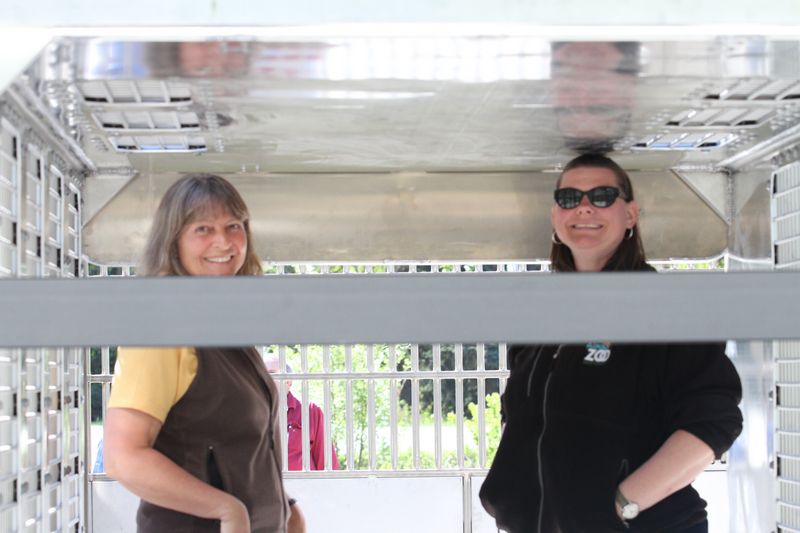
Press Conference on the polar bear holding module. USFWS/Rose Primmer